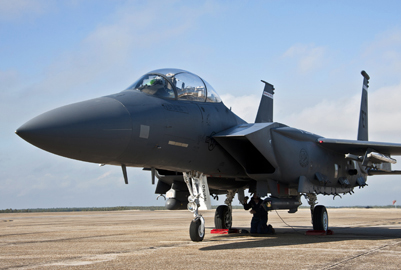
New F-15E radar system

Steve Coleman completes last-minute pre-flight checks underneath an F-15E Strike Eagle Jan. 18, 2011, on the flightline at Eglin Air Force Base, Fla. This F-15E is equipped with the new APG-82(V)1 radar, which replaces the 24-year-old APG-70 radar system. Mr. Coleman is an F-15E crew chief.